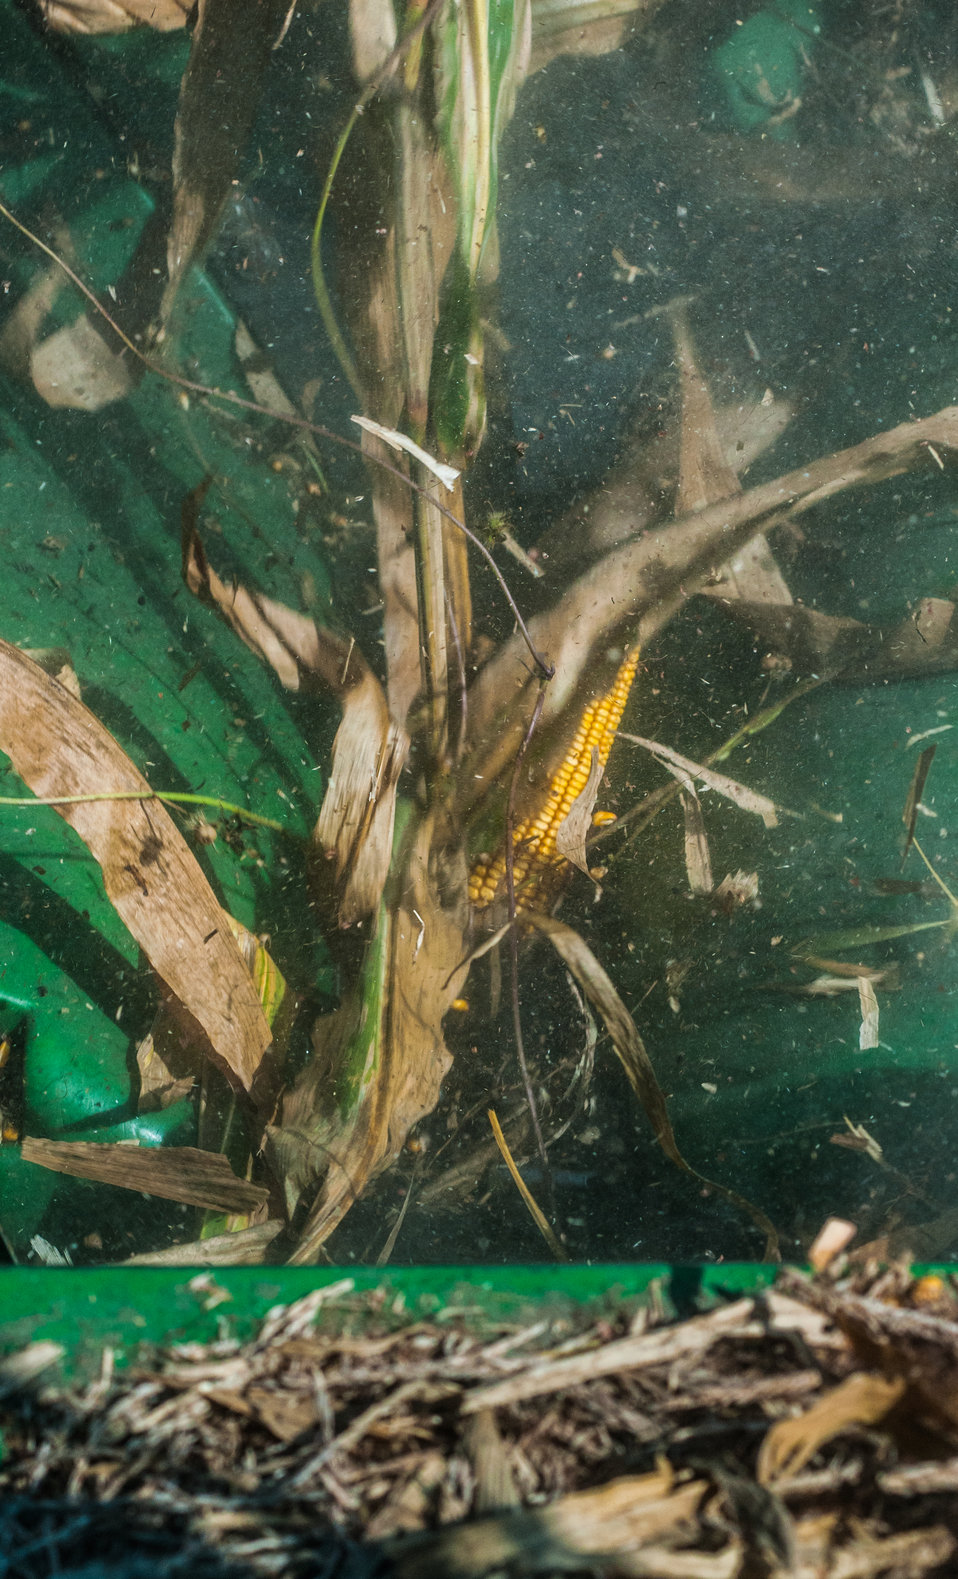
The view out of the operators cab of a corn harvester as corn stalks are cut and the kernels and cornstalks separated during the harvest on Friday, Sept. 20, 2013 harvest, at the John N. Mills & Sons farm; a family owned business located in the Hanover and King William Counties of Virginia. Pleasant Level Farm was the original farm and a Land Grant from King George III of England to Nicholas Mills in 1725. The original acreage has never left the Mills family name and continues to be farmed by the family. Now the farm covers 5,744 acres that produce corn, wheat, soybeans, barley, hay and timber, and pastures a large herd of beef cattle. They have been using conservation and stewardship practices since the 1960s. Some of the efficient practices include no-till planting methods and cover crops to reduce soil erosion and prevent the leaching of nutrients into ground water, as well as livestock stream exclusion. The farm has several conservation easements that aids in the preservation and restoration of wetlands and waterways. For information about the U.S. Department of Agriculture (USDA), please go to www.usda.gov.